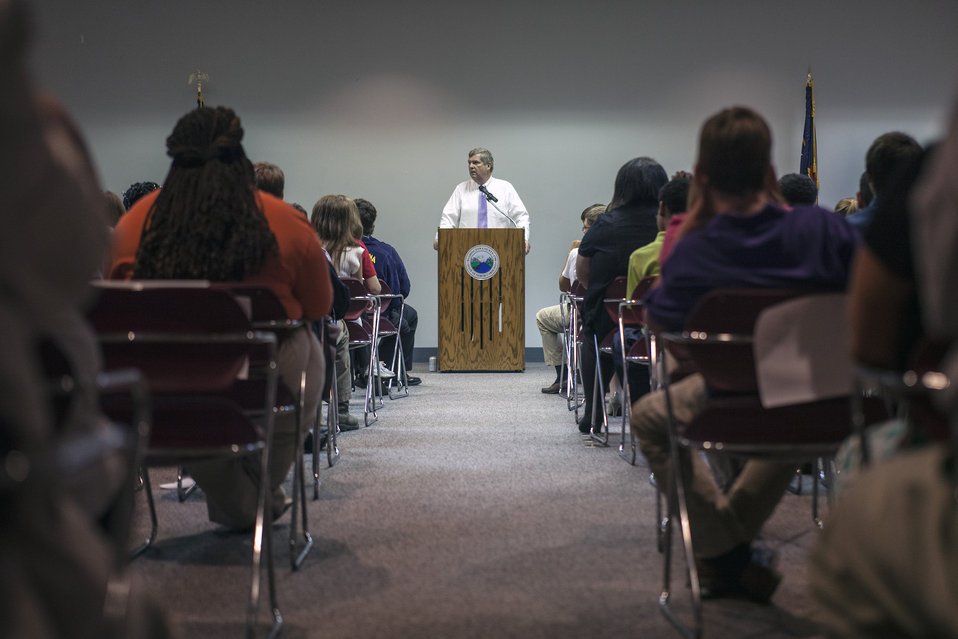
Agriculture Secretary Tom Vilsack speaks with students on the future of American agriculture at Northeast Regional School of Biotechnology and Agriscience in Plymouth, NC on Friday, Aug. 15, 2013.